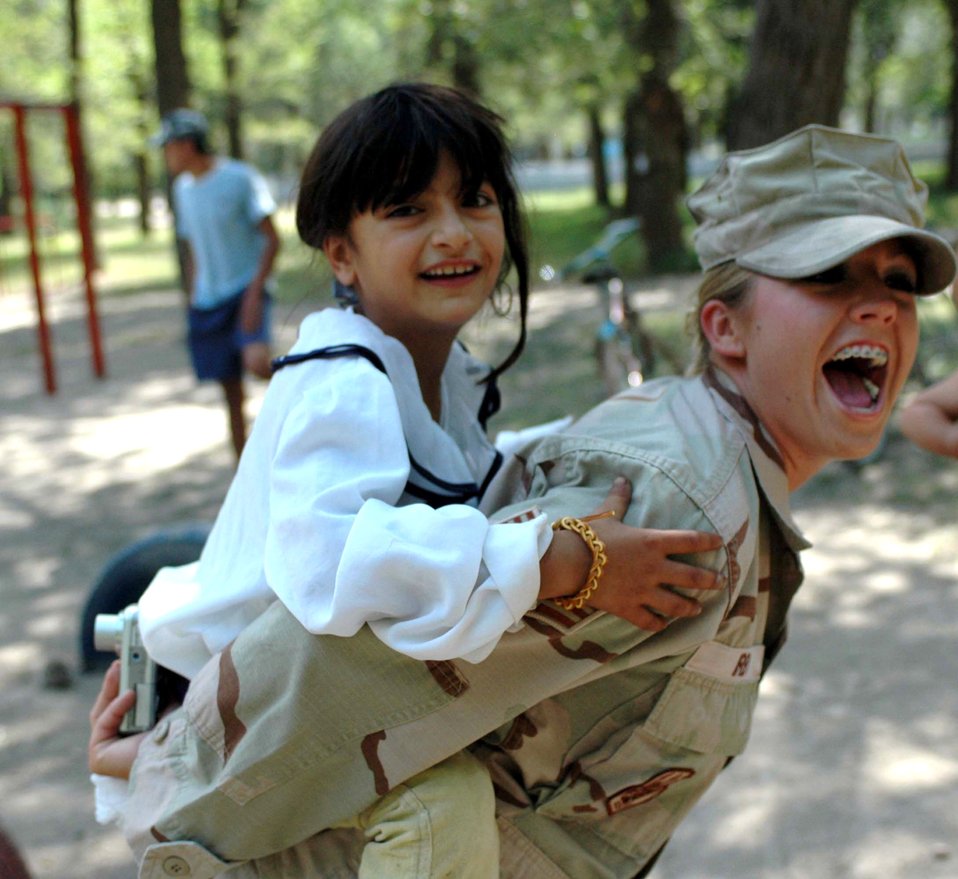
New children's playground

Senior Airman Emily Irby, 376th Expeditionary Security Forces Squadron, gives a local child a piggyback ride during the dedication ceremony for a new playground in Oktobersky Village, Krygyzstan. The playground was built by Airmen from nearby Manas Air Base.